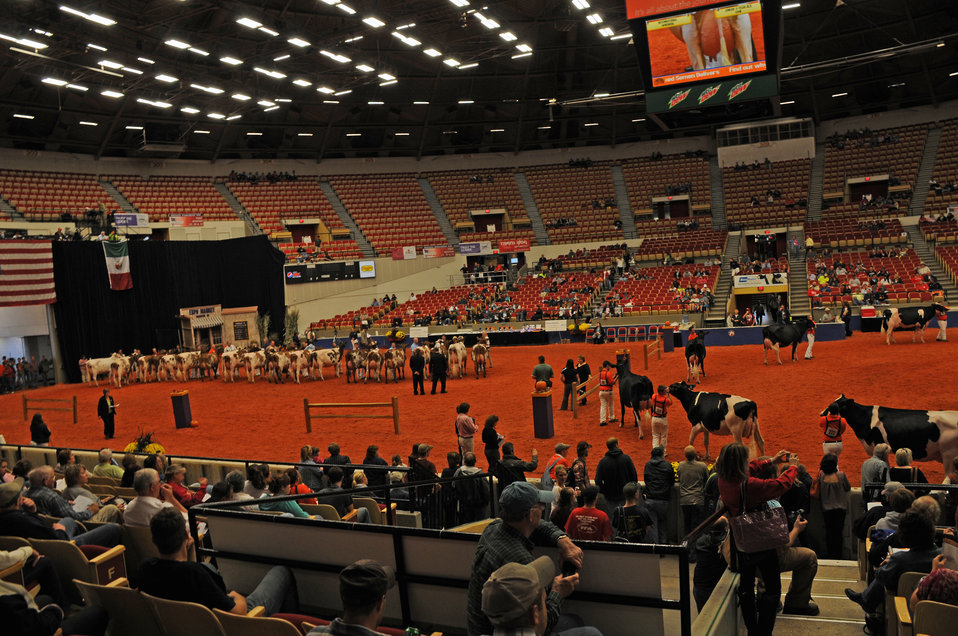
Agriculture Secretary Tom Vilsack looks at the cow judging contest at the 2012 World Dairy Expo in Madison, WI on Oct. 2, 2012. The World Dairy Expo serves as a forum for dairy producers, companies, organizations and other dairy enthusiasts to come together to compete, exchange ideas, knowledge, technology, and commerce.